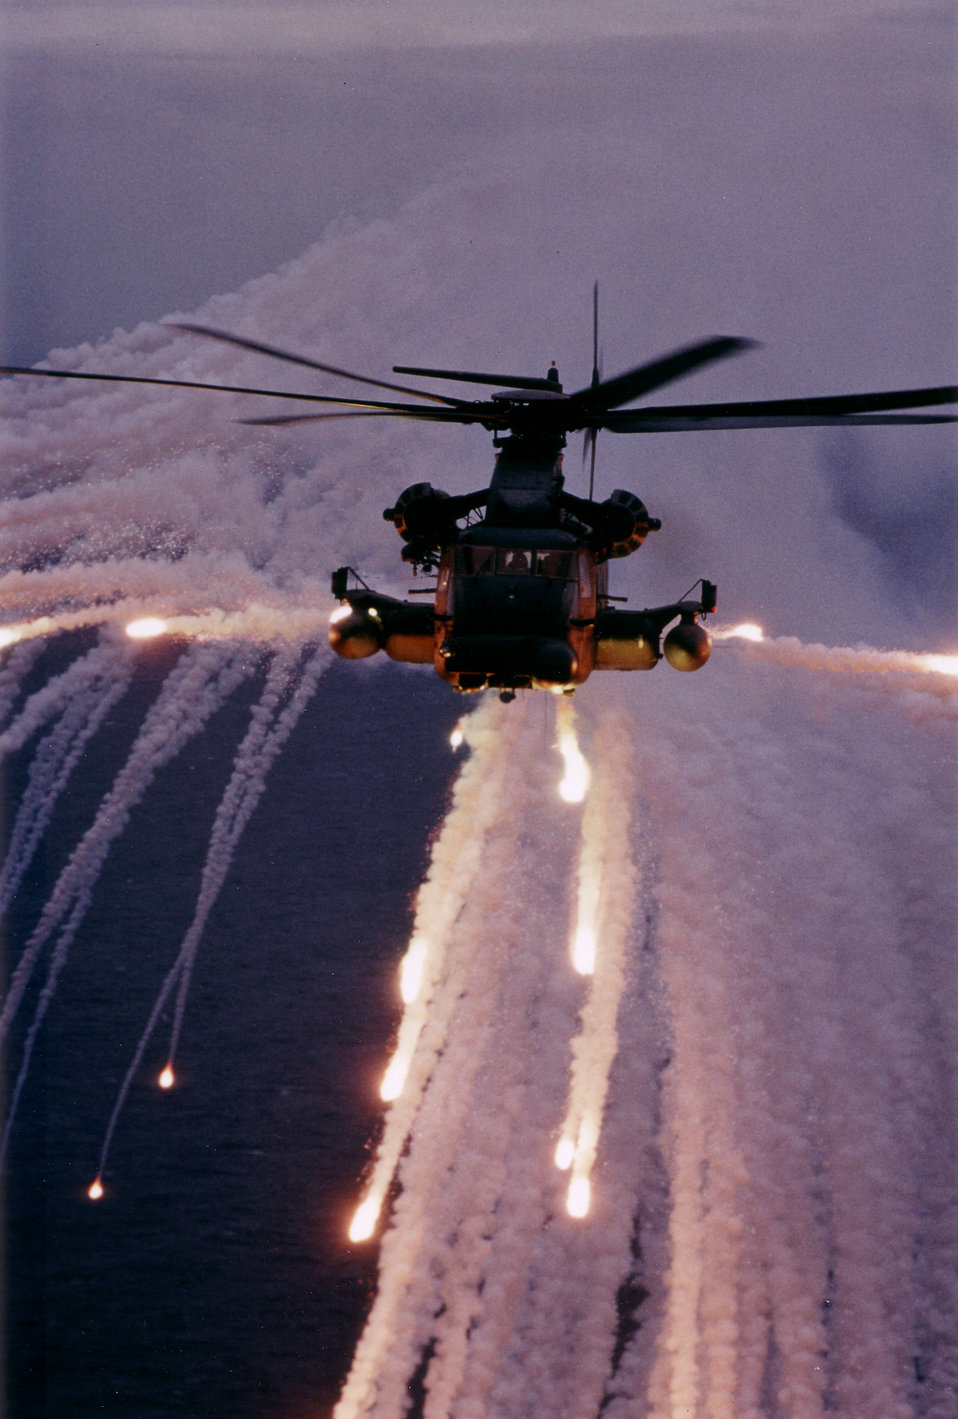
MH-53J Pave Low IIIE

1960'S -- MH-53J Pave Low IIIE from the 20th Special Operations Squadron, 16th Special Operations Wing, Hurlburt Field, Fla., expends flares over the Atlantic Ocean to demonstrate its defensive capabilities.